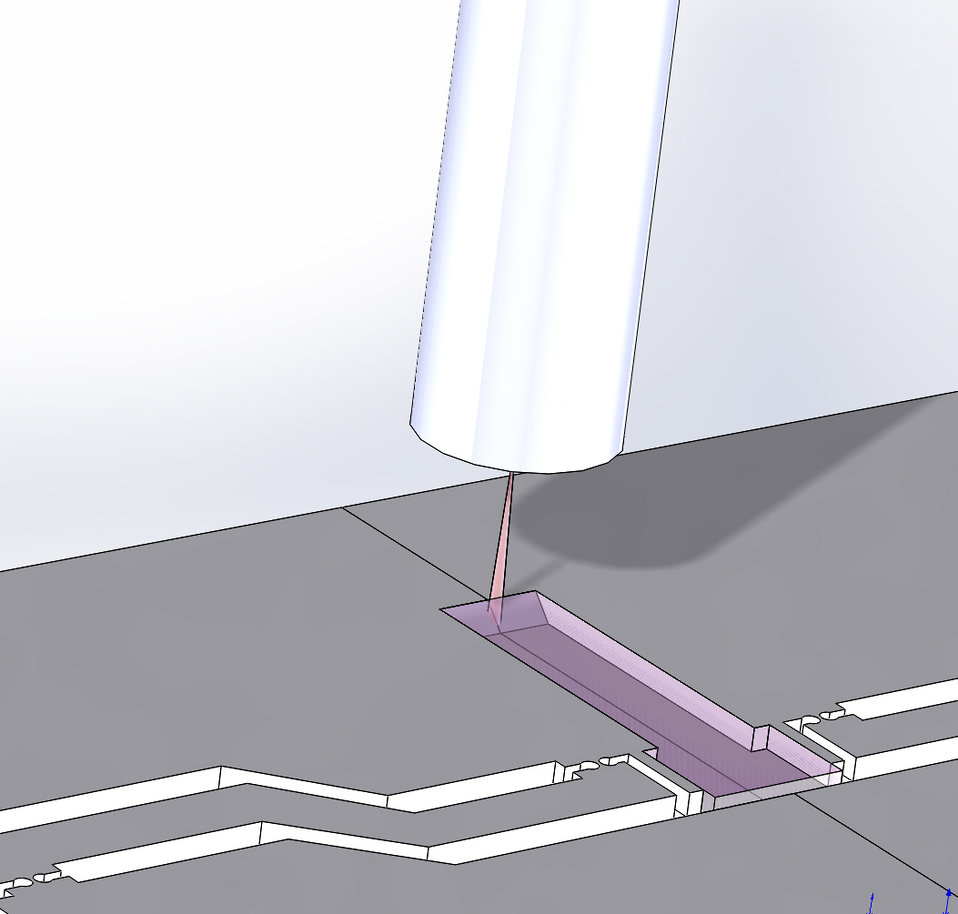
Interferometer Sensor

Nicholas Dagalakis and Yong-sik Kim developed an interferometer sensor that uses a laser to measure the displacement of moving objects with high precision. This invention has proven to be particularly useful for tracking moving parts in microelectromechanical systems (MEMS) devices.